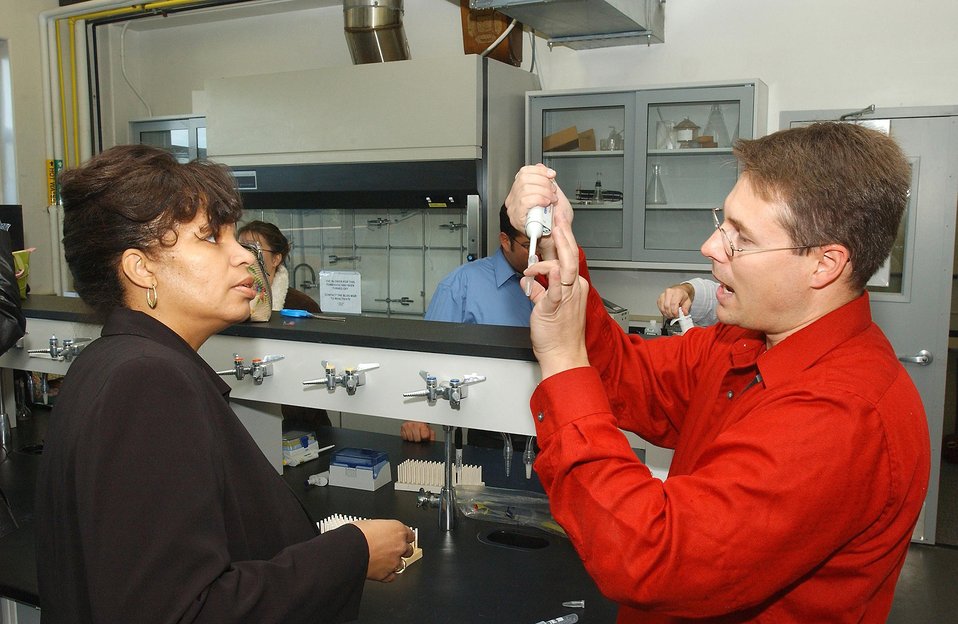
BROOKHAVEN NATIONAL LABORATORY SCIENTIST DEVELOPED AND TAUGHT MY GENES PROGRAM SHOWS A TEACHER HOW TO USE A MICROPIPETTE TO MEASURE SMALL AMOUNTS OF FLUID FOR A GENETICS EXPERIMENT.

IN THE MY GENES PROGRAM, TEACHERS WILL APPLY WHAT THEY HAVE LEARNED AND WILL WORK WITH SCIENTISTS TO OFFER AN IN-CLASS STUDENT DNA WORKSHOP AT THEIR SCHOOLS. IT WILL INTRODUCE THE STUDENTS AND EDUCATORS TO LABORATORY EXPERIMENTS, EQUIPMENT AND COMPUTER RESOURCES TO ILLUSTRATE MAJOR CONCEPTS IN GENE ANALYSIS.